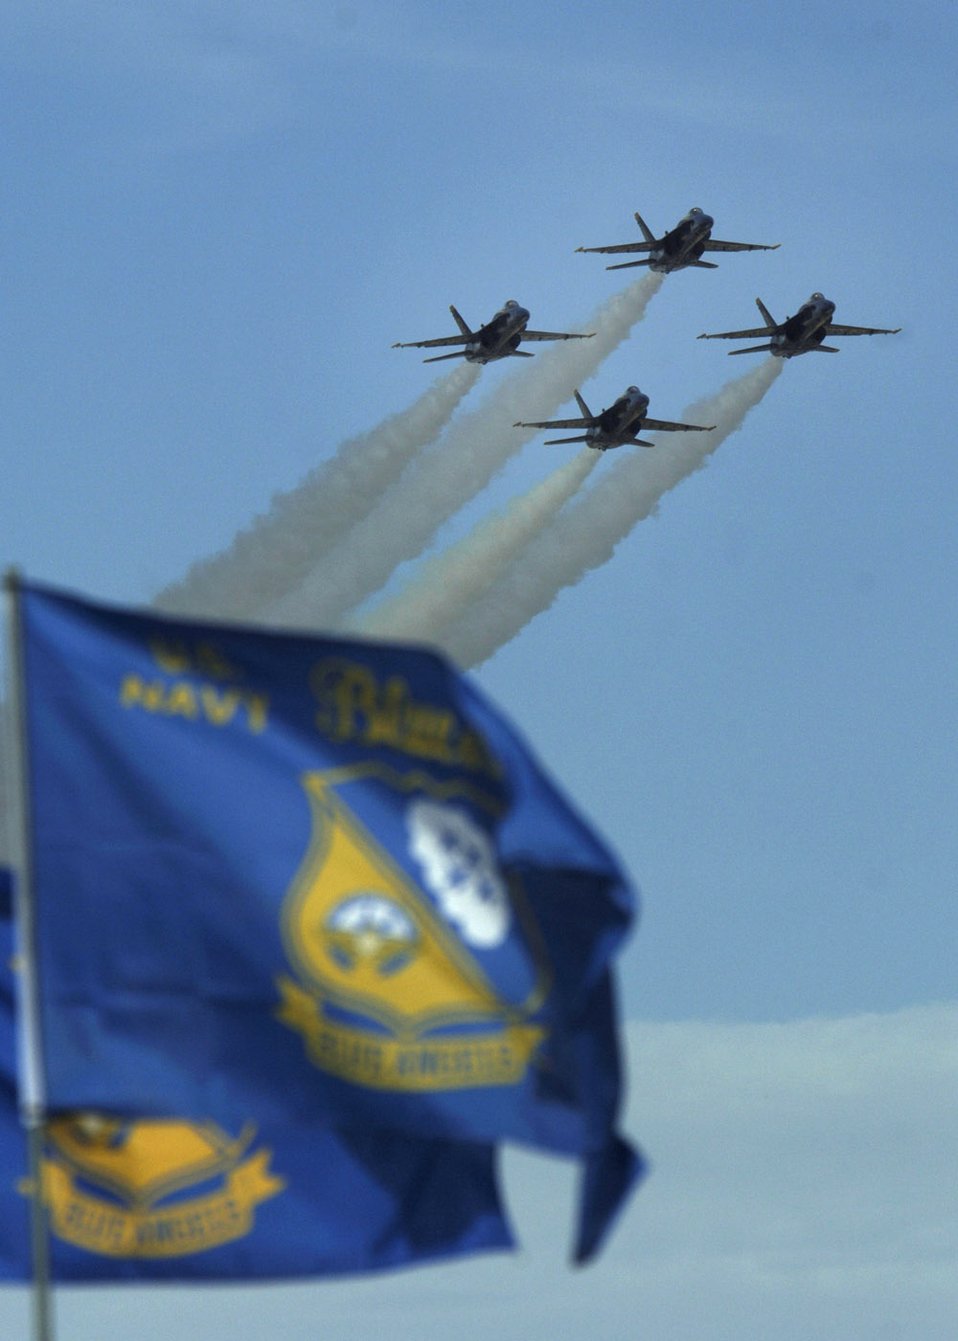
Air show features '80 Years of Airpower for America'

The U.S. Navy Blue Angels Flight Demonstration Team flies by in their four-plane diamond formation March 18 during the 2007 Aerospace and Arizona Days air show at Davis-Monthan Air Force Base, Ariz. The two-day air show offered public an up-close look at military and civilian aerial demonstrations and static-display aircraft from across the U.S. The theme for this year's show was